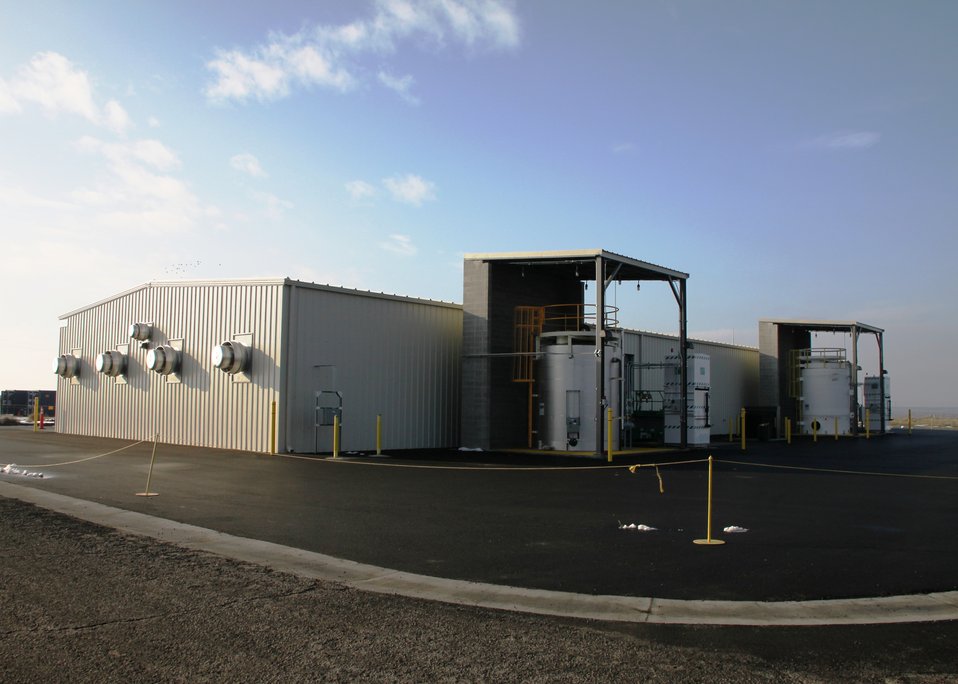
New Resin Improves Efficiency, Reduces Costs in Hanford Site Groundwater Treatment

The new resin was installed at the 100-DX Groundwater Treatment Facility, where it operated over one year without a single resin change.

The ion exchange resin is loaded into a series of treatment tanks. As water flows through the tanks, the resin strips specific contaminants from the water.